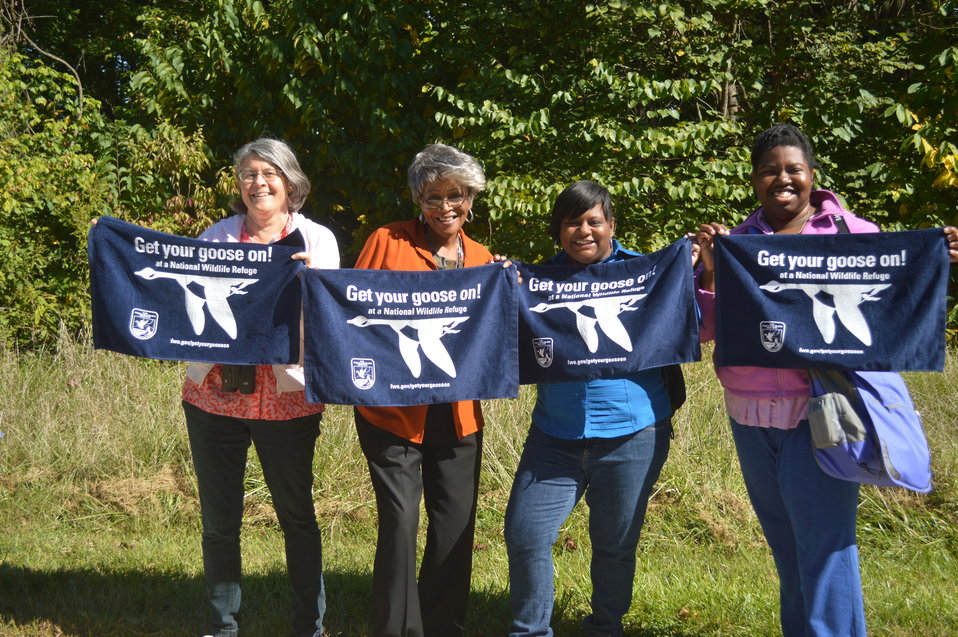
Get Your Goose On!

Photo taken at the National Conservation Training Center in Shepherdstown, WV.

Credit: Ryan Moehring / USFWS

#GetYourGooseOn